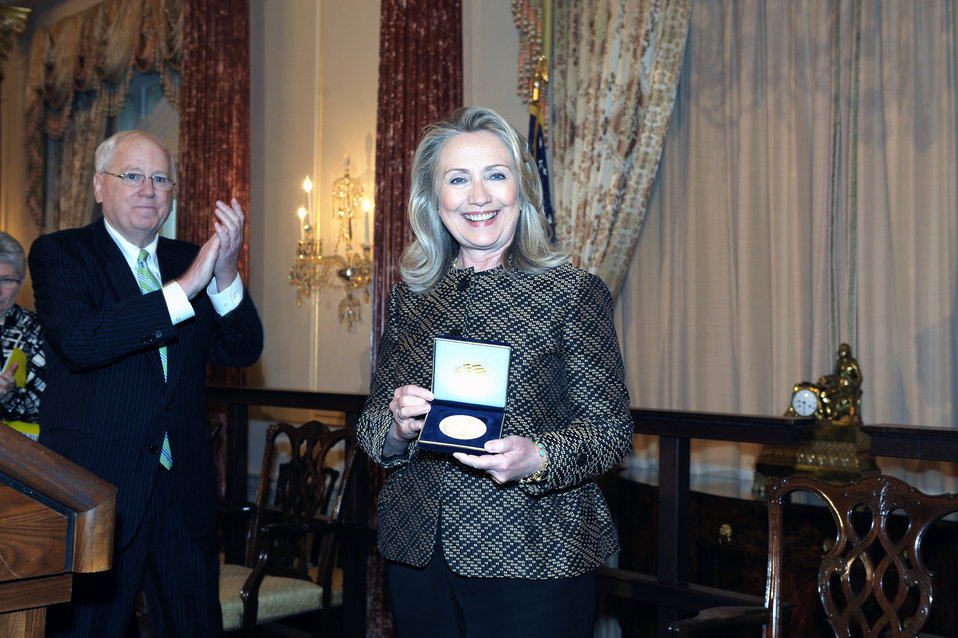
Secretary Clinton Delivers Remarks at the 2012 World Food Prize Laureate Announcement Ceremony

U.S. Secretary of State Hillary Rodham Clinton delivers remarks at the 2012 World Food Prize Laureate Announcement Ceremony at the Department of State in Washington, D.C. on June 12, 2012.